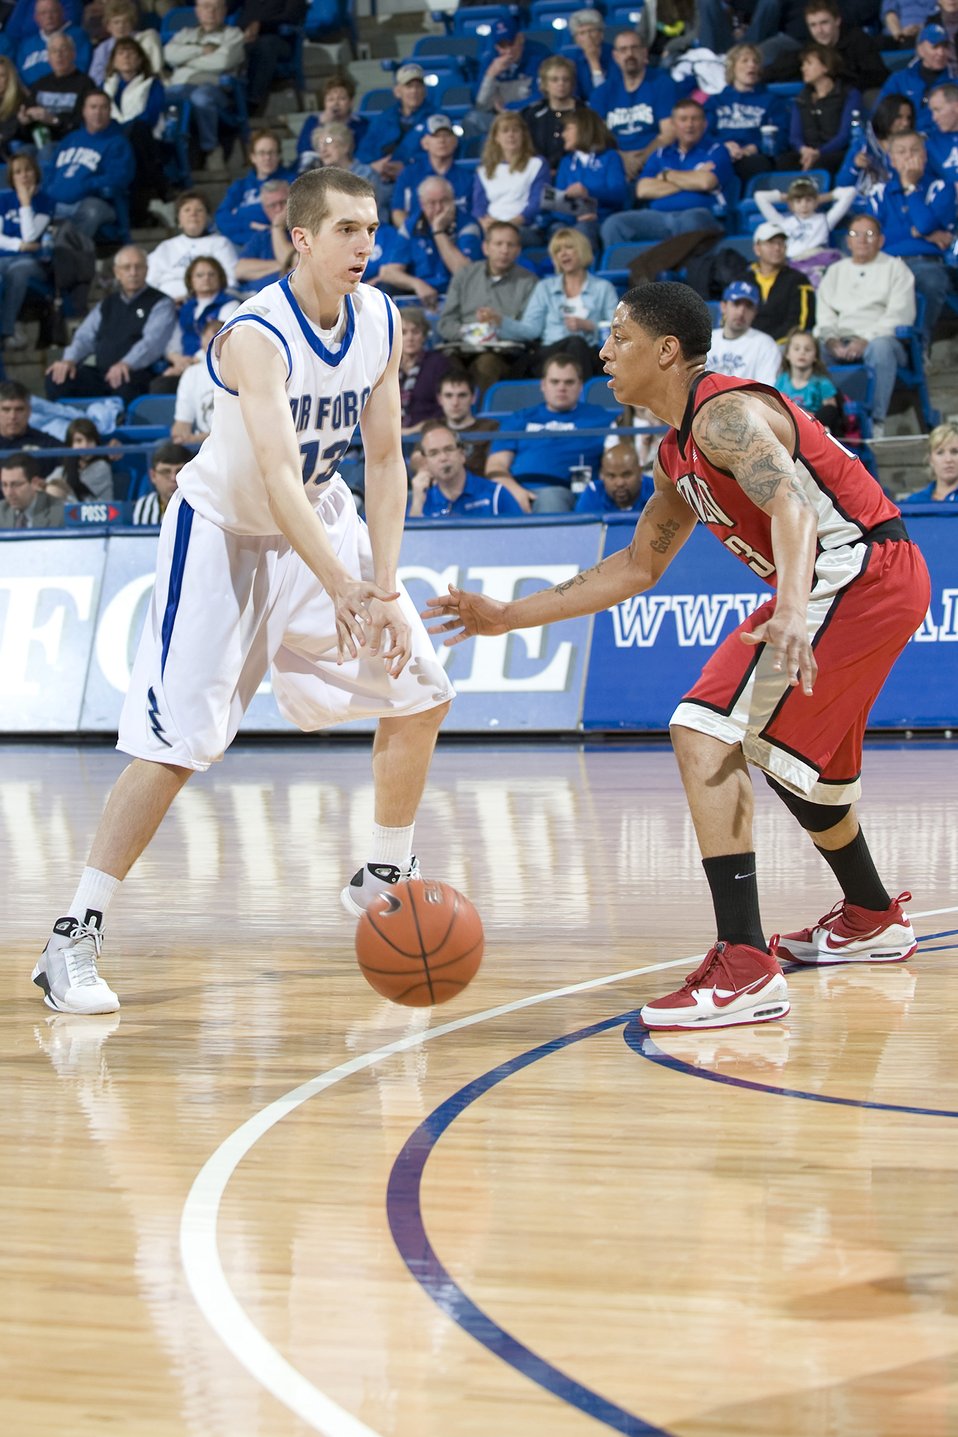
Falcons fall to Running Rebels

Air Force freshman forward Zach Bohannon makes his way past Rebel guard Anthony Marshall during the Feb. 27, 2010, basketball game against the University of Nevada Las Vegas at the U.S. Air Force Academy's Clune Arena. The Falcons were unable to get much penetration against a swarming man-to-man Rebel defense, and were forced to spend much of their time on the perimeter. UNLV went on to defeat the Falcons for the fifth consecutive time by a score of 77 to 47.